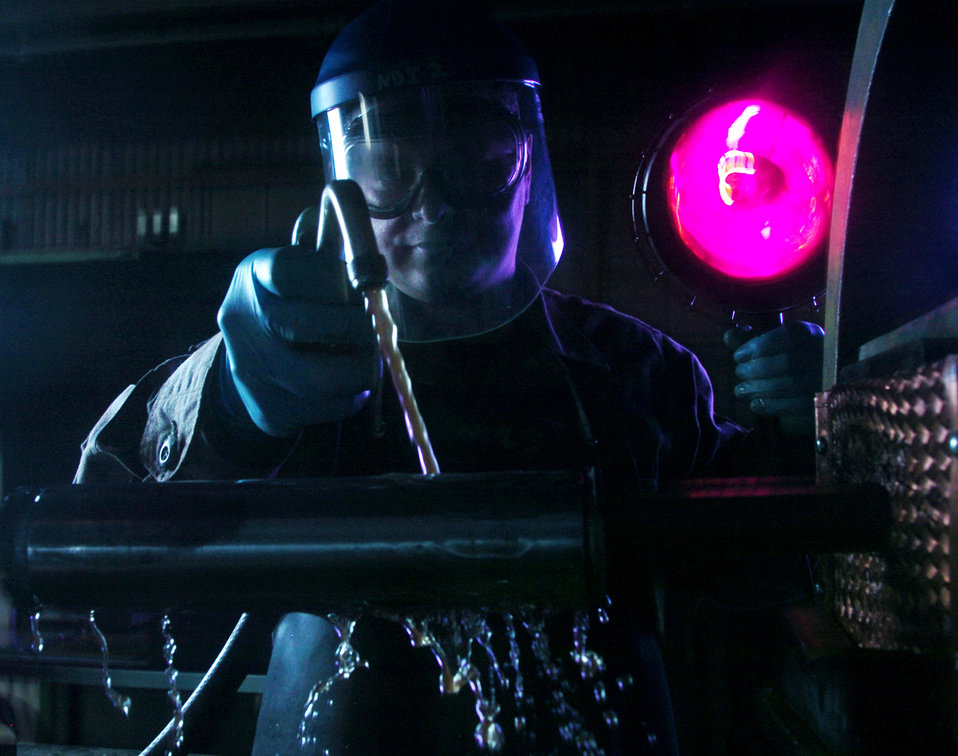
NDI technicians ensure aviation safety

YOKOTA AIR BASE, Japan -- Master Sgt. Bobby Fruge conducts a magnetic particle inspection on a C-130 Hercules wheel sleeve here. He is using oil mixed with fluorescent magnetic particles and an ultraviolet lamp to find cracks on the component. Sergeant Fruge is a nondestructive inspection technician assigned to the 374th Maintenance Squadron.